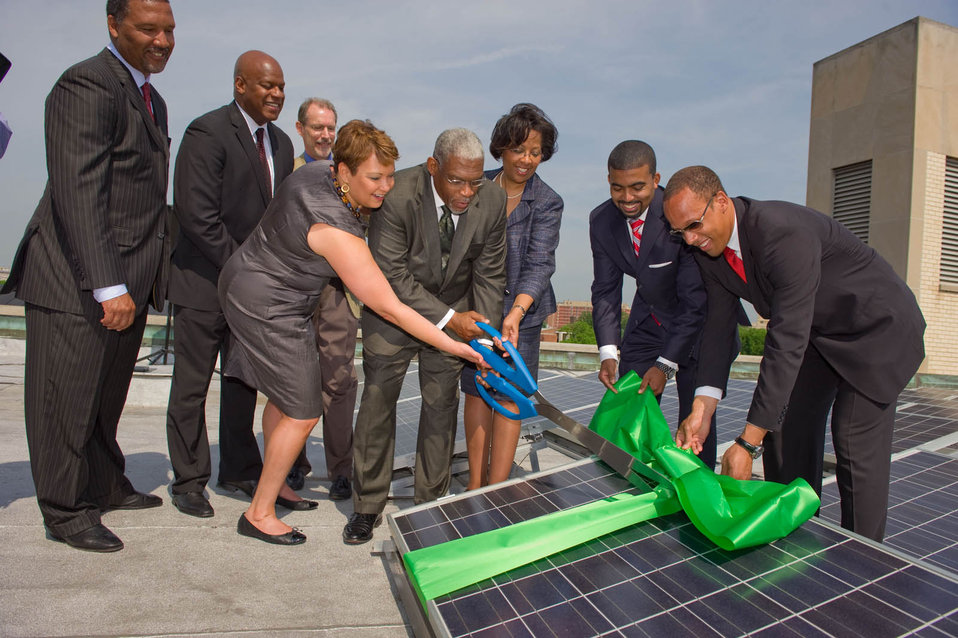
2011-05-03 FlaAveSolar 019